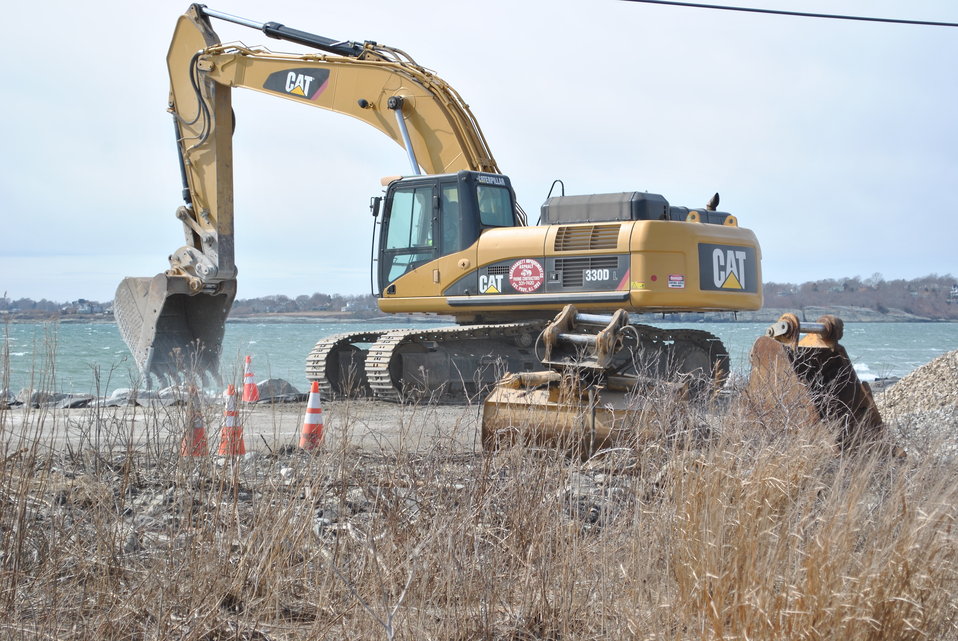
Repairs begin at Sachuest Point Road (RI)

Construction work has begun on the public road that leads to Sachuest Point National Wildlife Refuge. The Rhode Island Department of Transportation is rebuilding about 1,500 feet of Sachuest Point Road and providing armor stone to protect the road from further erosion during storm surges with high surf. The Service and the Federal Highway Administration are funding the repairs, which are expected to be complete in May.